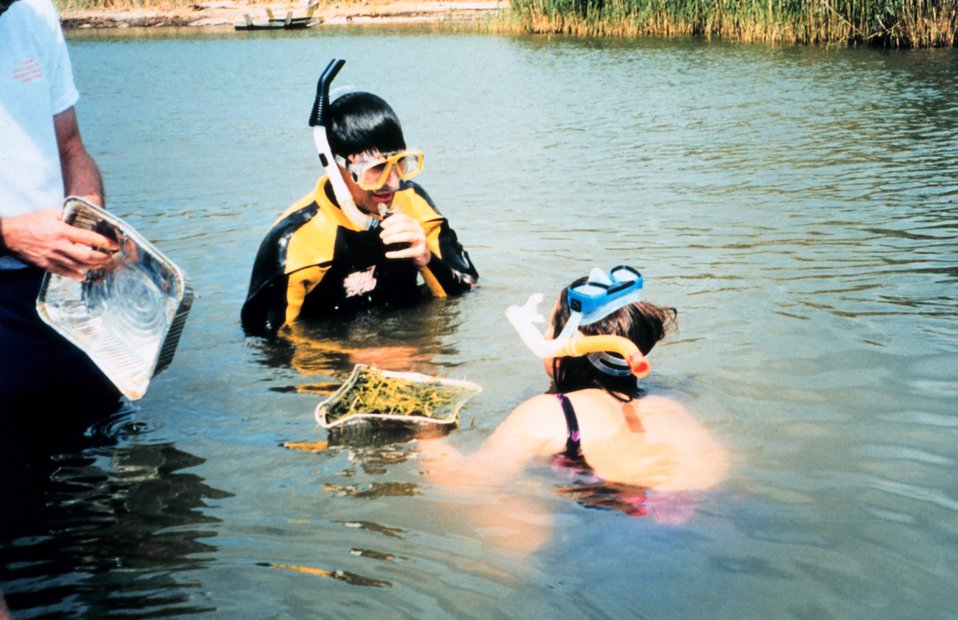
Planting 'homegrown' wild celery plants as part of Chesapeake Bay Foundation 'Bay Grasses for the Masses.'